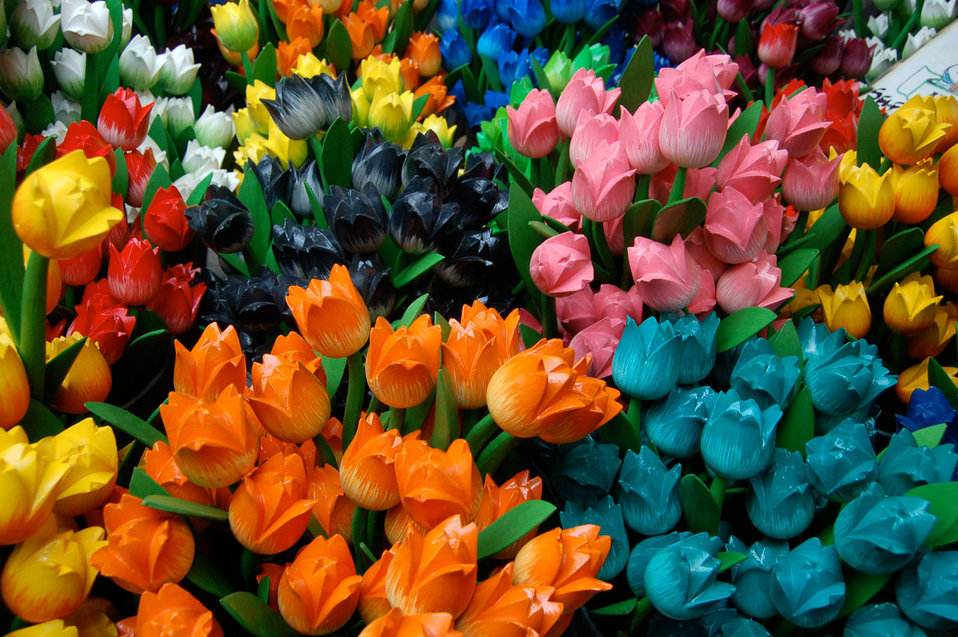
Amsterdam tulips

Wooden tulips at a street stand in amsterdam.